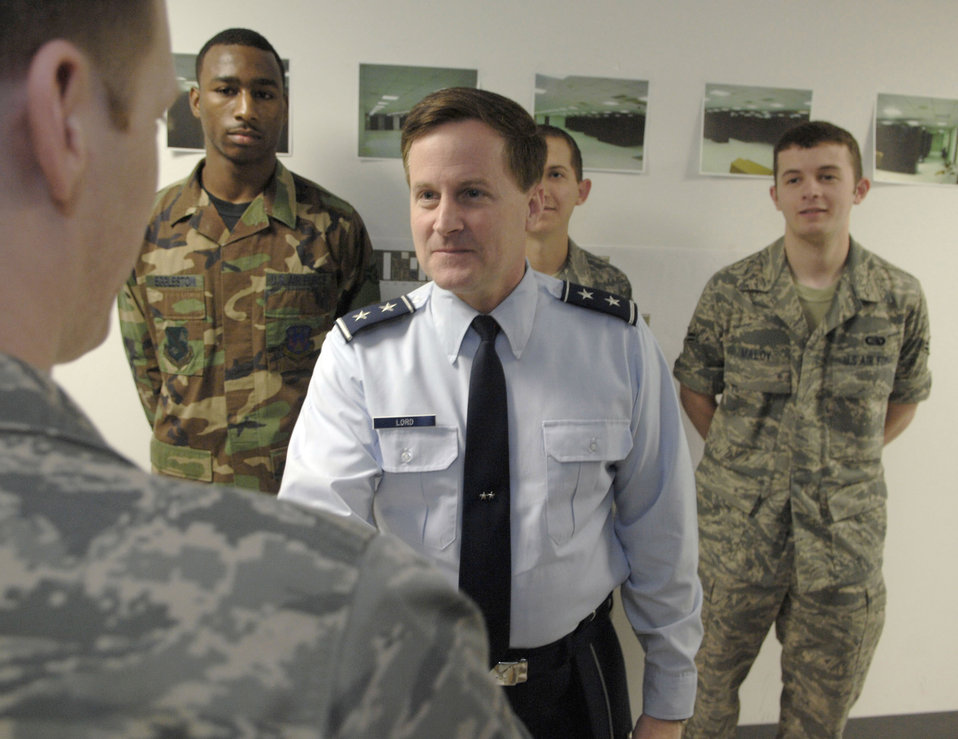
New Area Processing Center consolidates mail, file sharing

Maj. Gen. William T. Lord greets Staff Sgt. Christopher Newbill, Senior Airman Sean Manning, and Airmen 1st Class Taji Eggleston and Brenden Maloy May 1at Andrews Air Force Base, Md. The Airmen helped install the Air Force's newest Area Processing Center there. The APC consolidates e-mail, file sharing and many other data and information services for more than 160,000 Air Force workers. General Lord is the Air Force Cyber Command provisional commander.